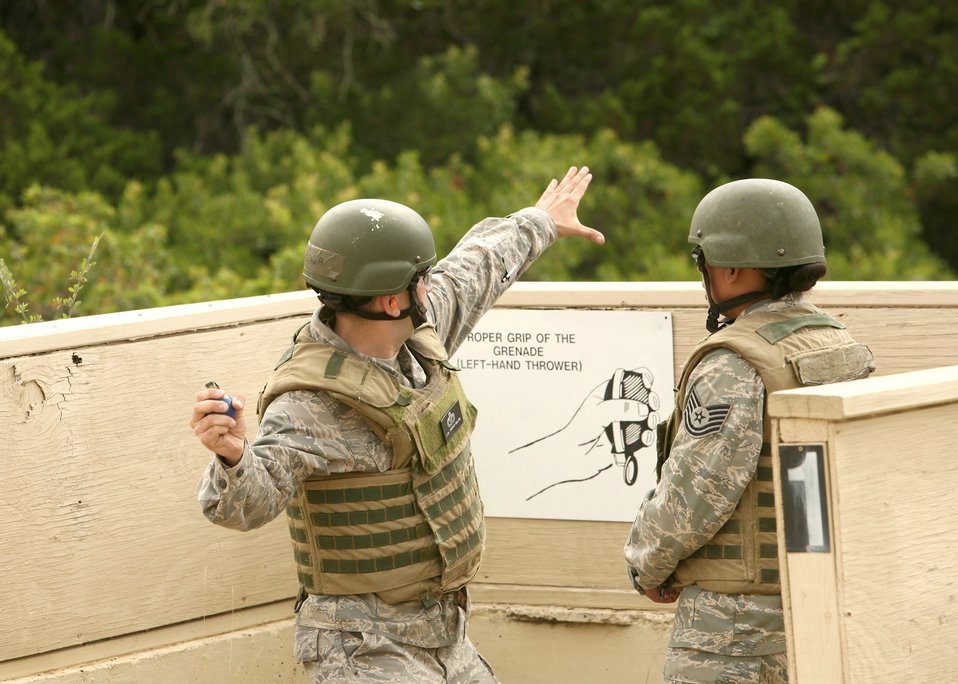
Training with a bang!

Lt Col. Francisco Orellana prepares to throw an M-67 simulator grenade as instructor Tech. Sgt. Kerissa Rivas observes June 18 at Camp Bullis, Texas. Students are evaluated by their instructors before moving on to live ordnance. Colonel Orellana is a student in the Security Forces Basic Officers' Course.